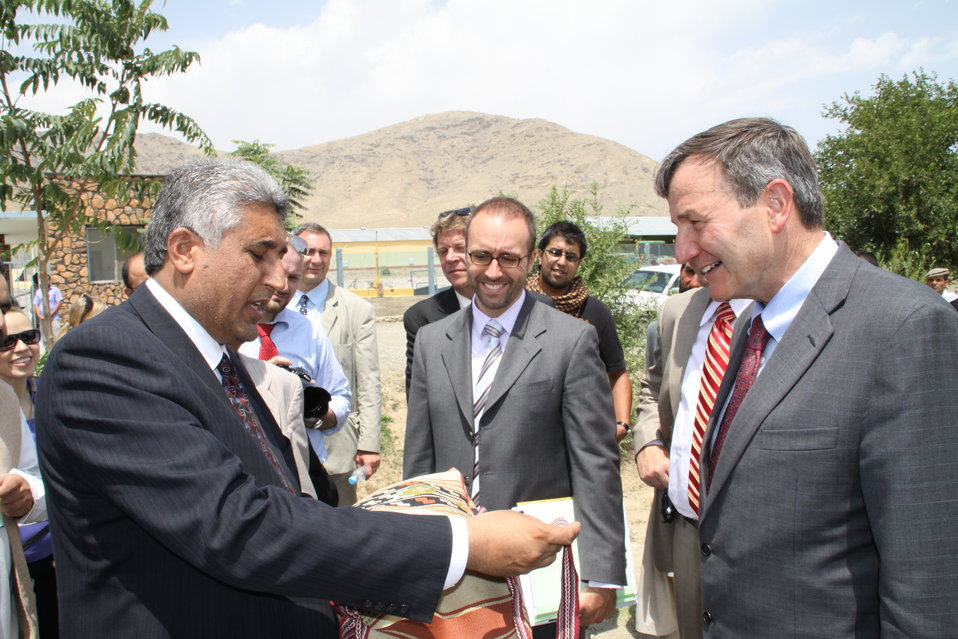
Badam Bagh Farm